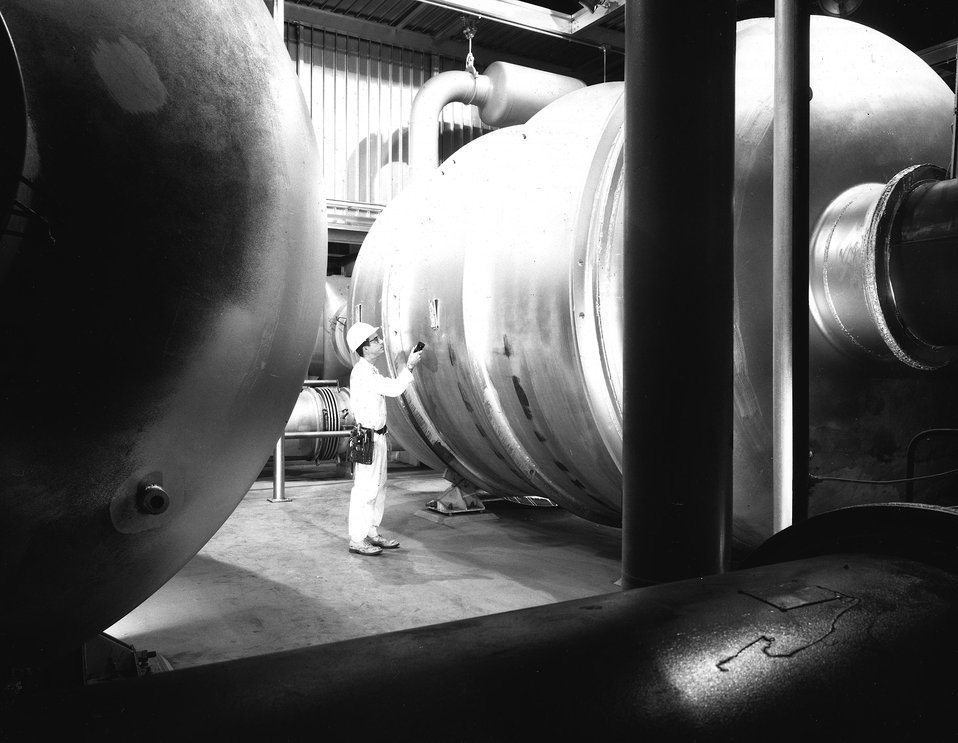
Large size compressors and converters are shown at the Energy Research and Development Administration's Oak Ridge (Tenn.) Gaseous Diffusion Plant. It is this type of equipment through which uranium hexaflouride is pumped to achieve separation of fissionable U-235 from the more abundant U-238. c. 1972